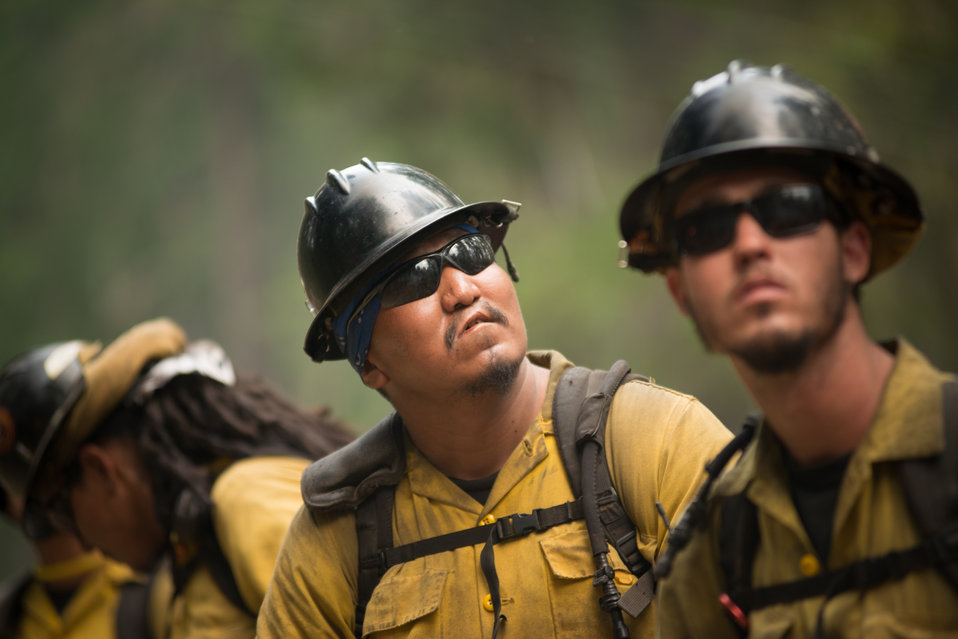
Geronimo Interagency Hotshot Crew, Department of the Interior (DOI) Indian Affairs (IA) Bureau of Indian Affairs (BIA) San Carlos Agency in Arizona; on assignment at the Big Windy Complex Wildlands Fire, approximately 15 miles west of Interstate-5 and East Northeast of Galice, Oregon, conducts a prescribed burn 'burnout' operation to help stop the main fire that may head toward this roadway, on Friday, Aug 9, 2013. The primary mission of the Interagency Hotshot Crews (IHC) is to provide a safe, organized, mobile and highly skilled hand crew for all phases of wildland fire suppression. The arduous duties and specialized assignments required of IHC personnel require uniform staffing, certification, training, equipment, communications, transportation, organization, and qualifications that adhere to interagency standards and guidelines.